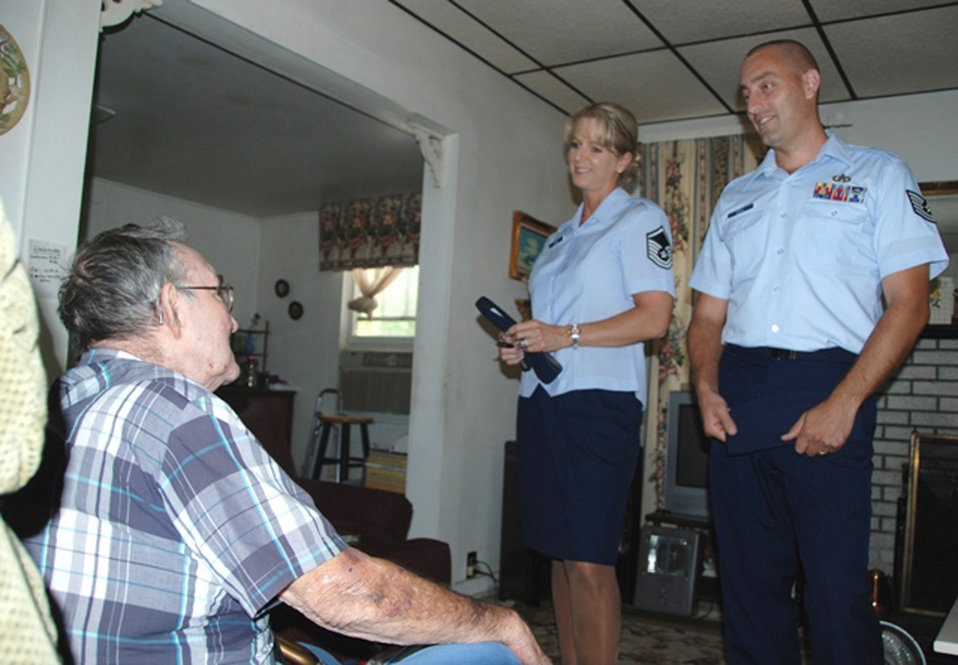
Tyndall Airmen participate in Meals on Wheels program

Master Sgt. Wendy Gehri and Tech. Sgt. Joe Ezell, members of the 601st Air and Space Operations Center at Tyndall Air Force Base, Fla., visit with Mr. Laurice Hand after delivering food to his house as a part of the local Bay County Council on Aging Meals on Wheels program.